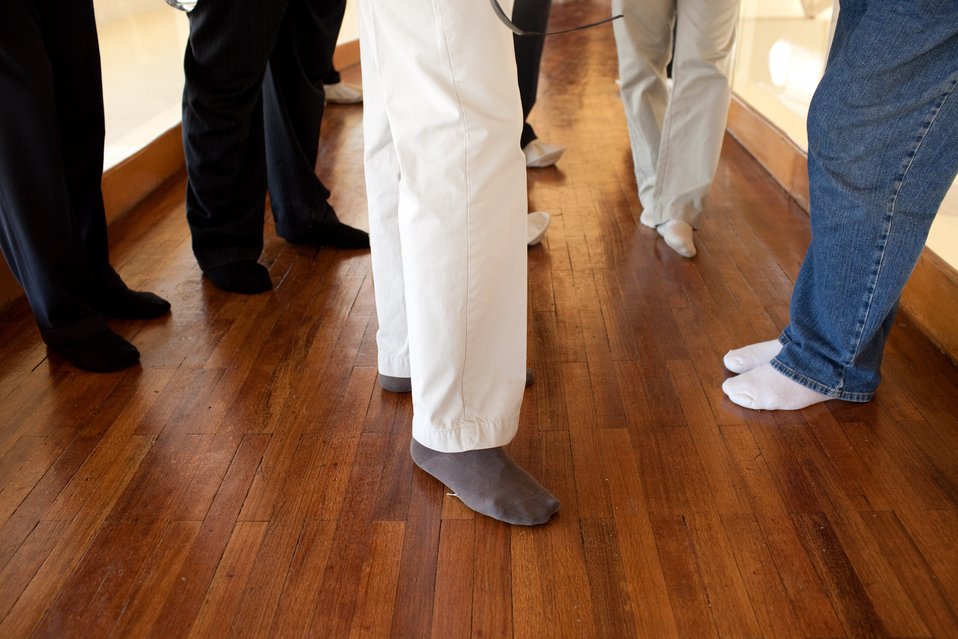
The feet of President Barack Obama, center foreground, and others during a tour of a museum at the Pyramids and Sphinx in Egypt on June 4, 2009.